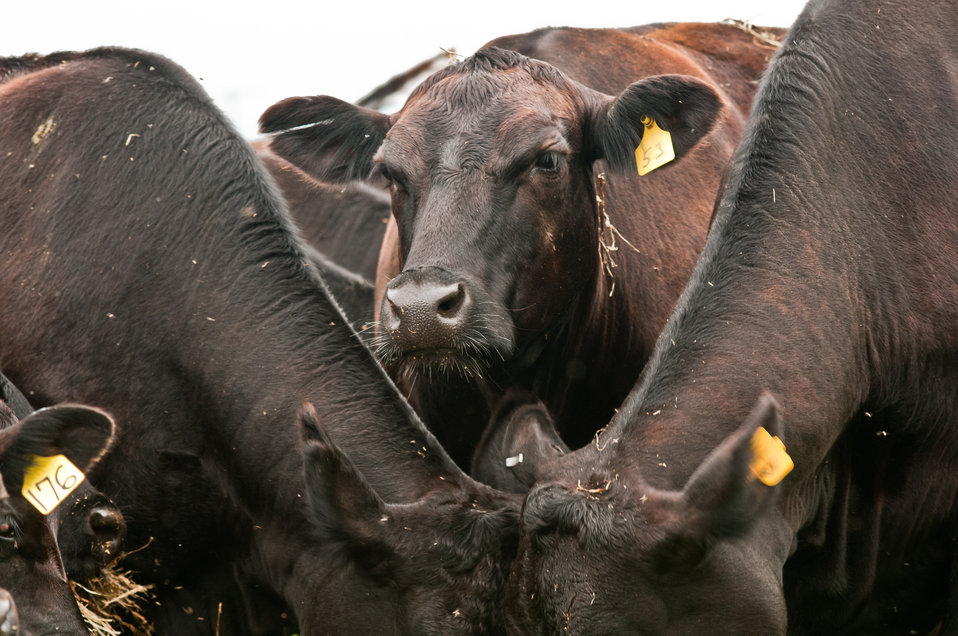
Black Angus cows and calves graze organic pastures, and for added nutrition and variety, they enjoy a daily feeding of sweet silage at Nick’s Organic Farm, owned by Nick Maravell, in Adamstown, MD on Friday, July 12, 2013. The white plastic wrapped bales of pasture grass and alfalfa have been fermenting for months to create sweet silage that stores well and can be used to feed cattle at varying amount all year long. The fermentation process sweetens the taste and increases the vitamin levels. The farm produces Black Angus beef, chicken, turkey, eggs, hay, soybeans, corn, alfalfa, orchard grass, rye; and other crops. The cattle are 100% grass-fed receiving certified organic pasture, certified organic hay (in winter), water and mineral salts mixed with sea kelp. The cattle are not fed hormones, antibiotics or animal products. Poultry feed from grain is ground from organic grain. The poultry also graze on organic pastures. The farm has conducted on-farm research with federal, state and non-profit agencies to refine organic practices. An organization such as the U.S. Department of Agriculture (USDA) Agricultural Research Service (ARS) center in Beltsville has been able to conduct research to improve organic crops and to breed and manage the cattle so that they have.